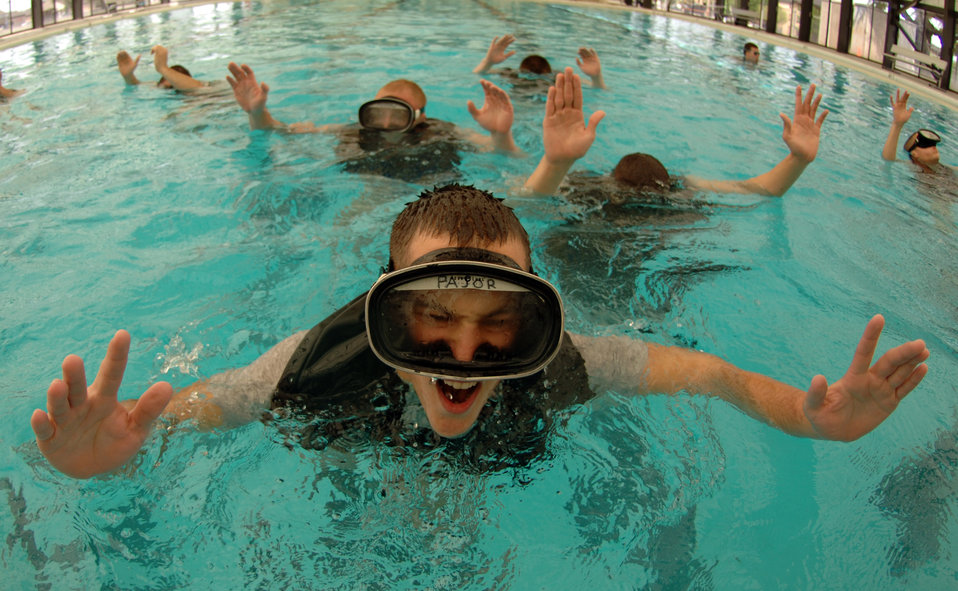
'That others may live'

Airman 1st Class Brian Pajor treads water with 16-pound weights on his belt during the pararescue indoctrination training course at Lackland Air Force Base, Texas, on Thursday, April 6, 2006. The 10-week indoctrination training is the first hurdle of intense physical and mental training for pararescue hopefuls. It prepares them for the 12 to 15 months of extreme training they must pass to become Air Force pararescue members.